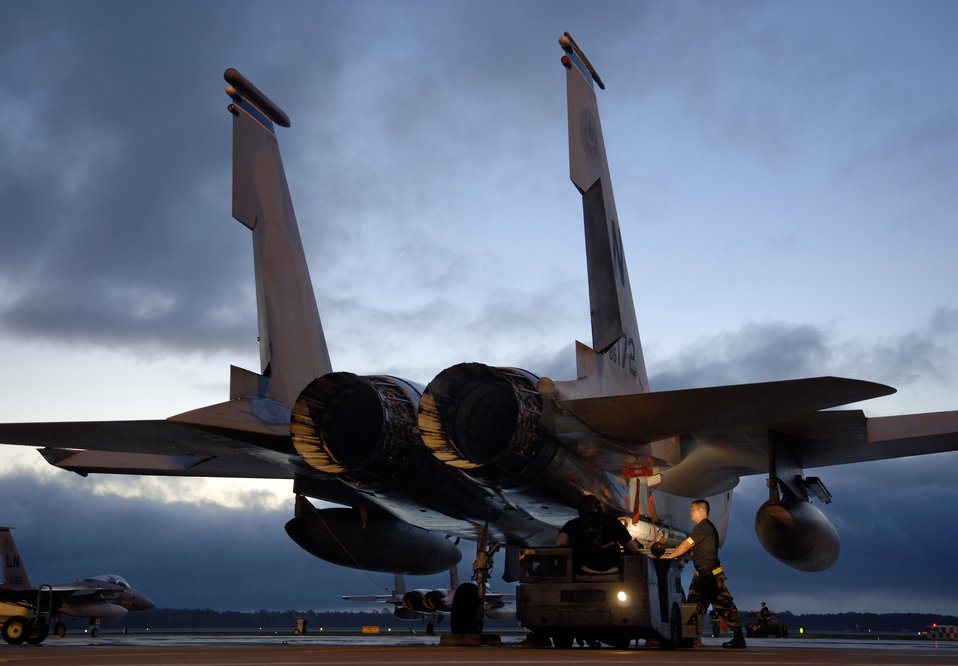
Sparrow missile

A weapons loading team led by Staff Sgt. Roderick Abad attach an AIM-7M Sparrow missile into position on an F-15 Eagle during a weapon systems evaluation at Tyndall Air Force Base, Fla., on Tuesday, May 9, 2006. The AIM-7 missile is being phased out of the Air Force inventory.